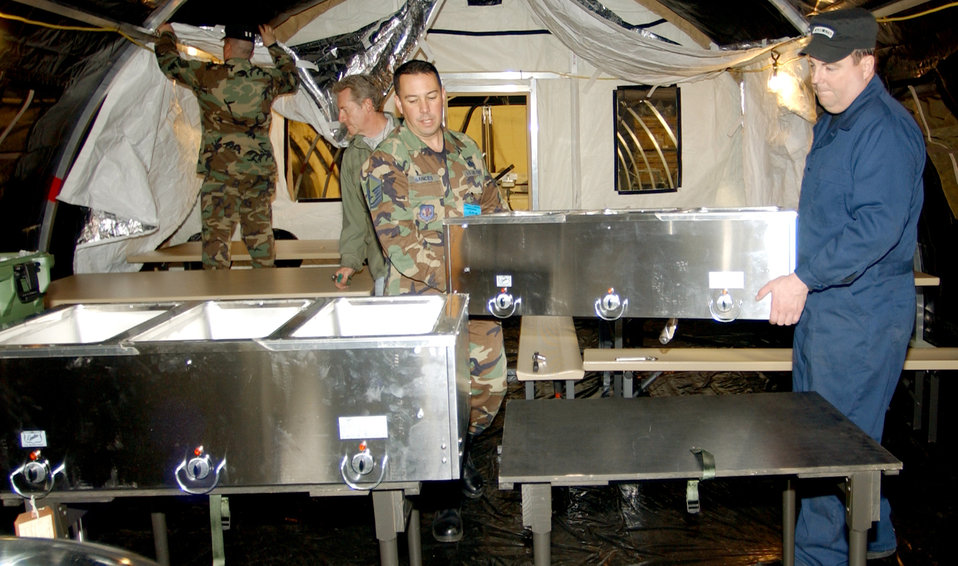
Air Force shows off new 'tent city'

SANEM, Luxembourg -- Workers assemble a portion of the